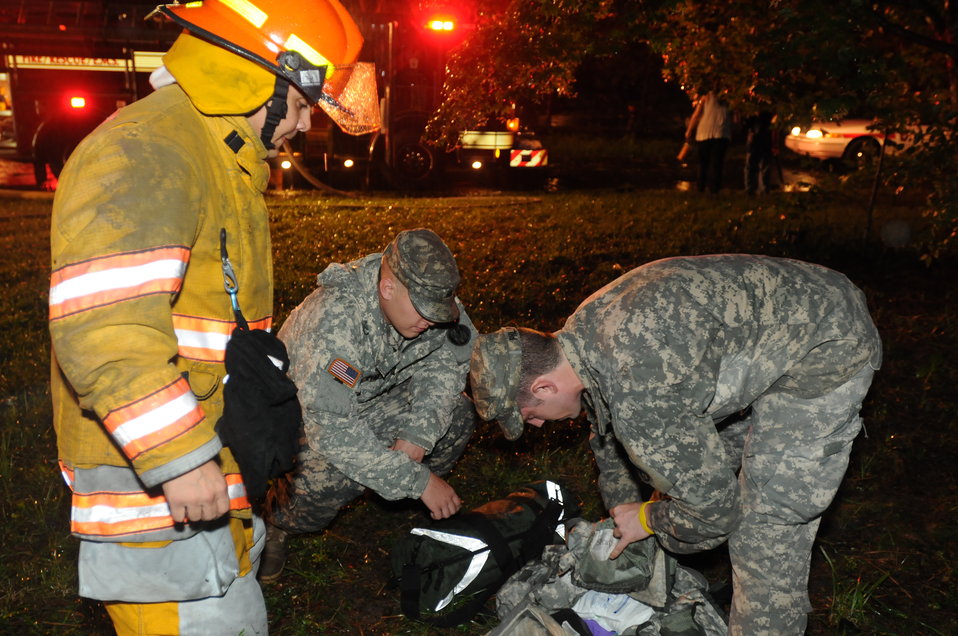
Hurricane Irene response

Army Sgt. Matt Ryan and Army Staff Sgt. Will Phillips, both medics from the 224th Area Support Medical Company of the Maryland National Guard, assist local firefighters as they exit a house fire in Salisbury, Md., Aug. 27, 2011. Local first responders were called to a house fire after a tree downed by Hurricane Irene caused power lines to arc electricity through a surge protector inside the home. Residents were home and were able to exit the house to safety.